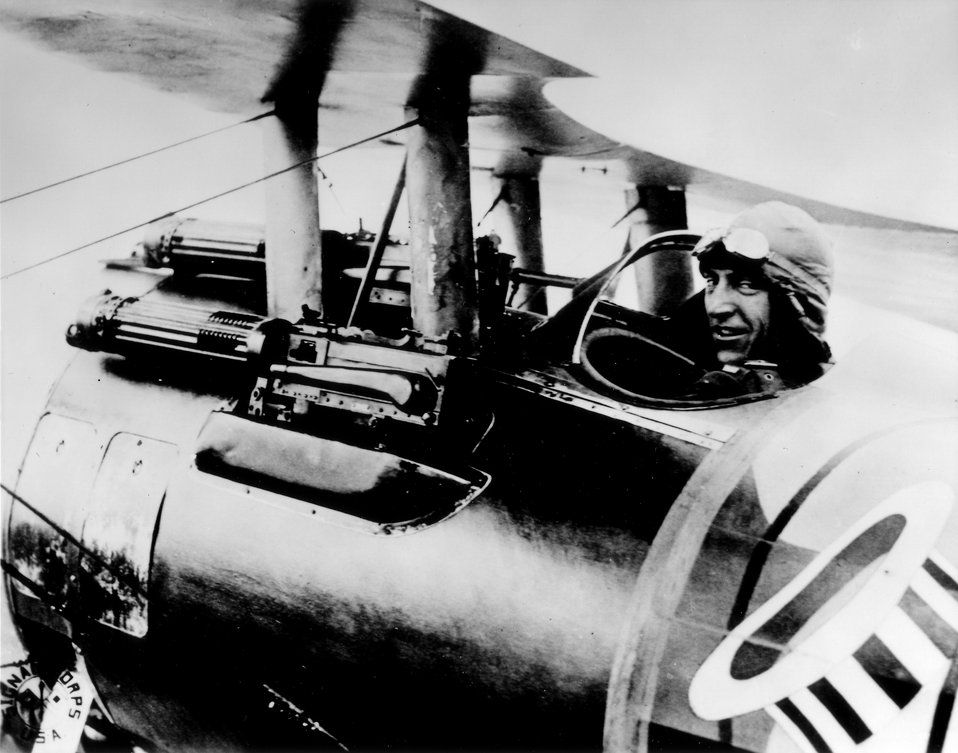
Eddie Rickenbacker

EARLY YEARS -- Edward Vernon Rickenbacker was the American